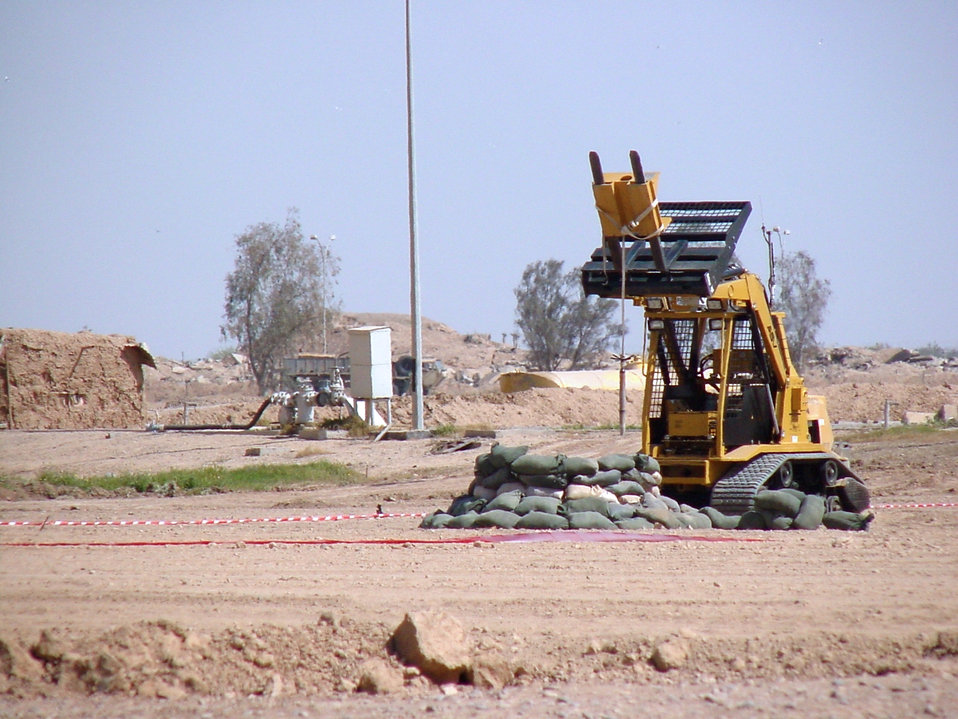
AFRL robots work to counter bomb threats

BALAD AIR BASE, Iraq -- An airborne all-purpose remote transport system clears an area of unexploded ordnance here. Explosive Ordnance Disposal Airmen use the systems to safely and effectively clear ranges while staying out of harm's way.